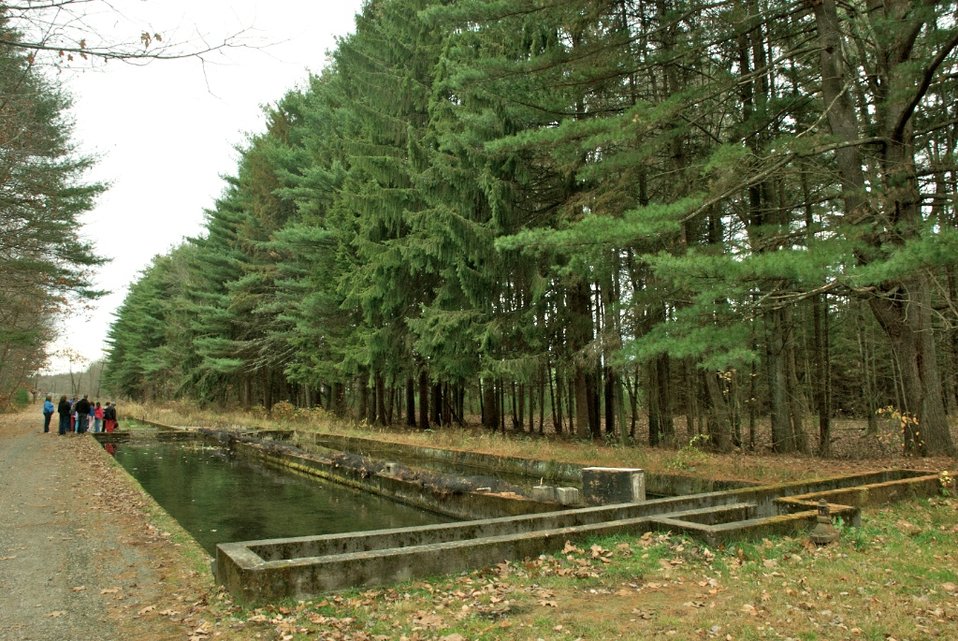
Natural Bottom Raceway

Students explore a raceway which provides salmon a natural, but controlled, environment in which they can grow.